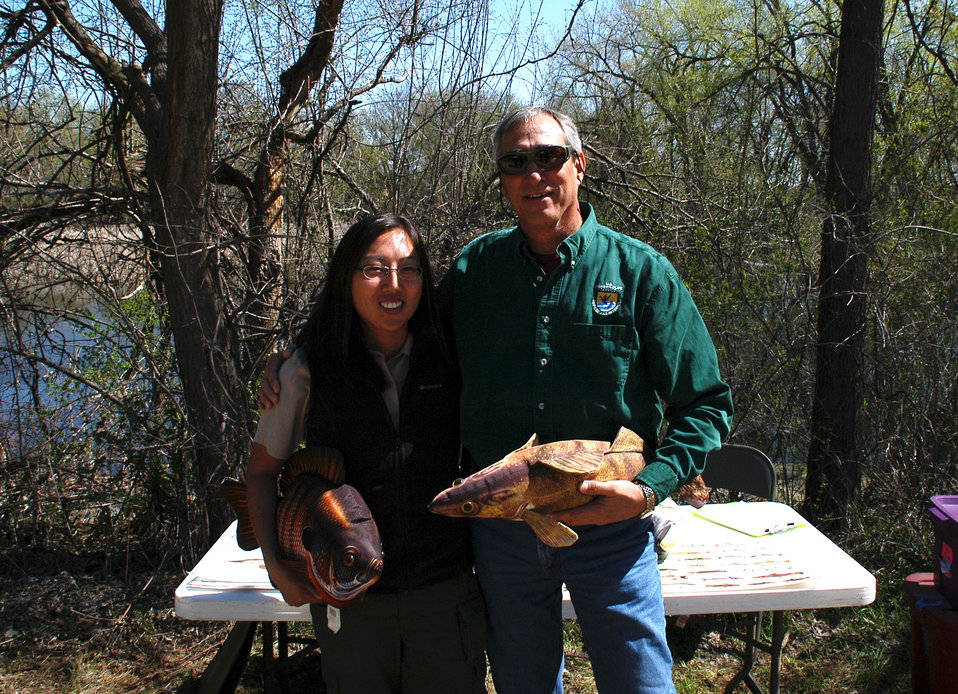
Regional Director Tom Melius and MN DNR Krista Jensen show off the Fish Identification Tools

On a more serious note, Regional Director Tom Melius and Environmental Interpreter pose with giant native fish.